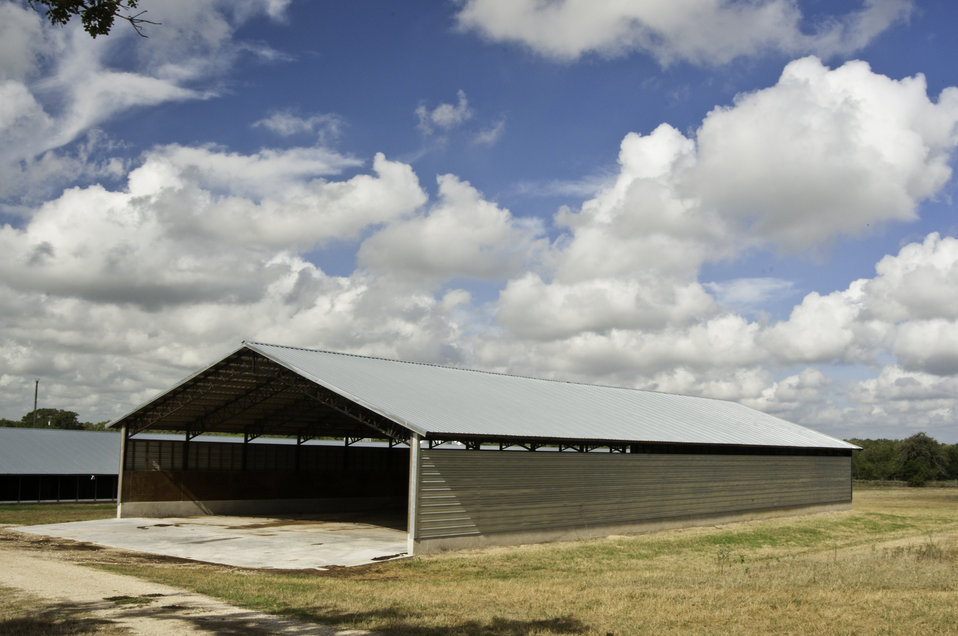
A dry stacking process is used to store solid poultry waste on the Bobby Morgan Poultry Farm in Luling, TX on Aug. 23, 2013.